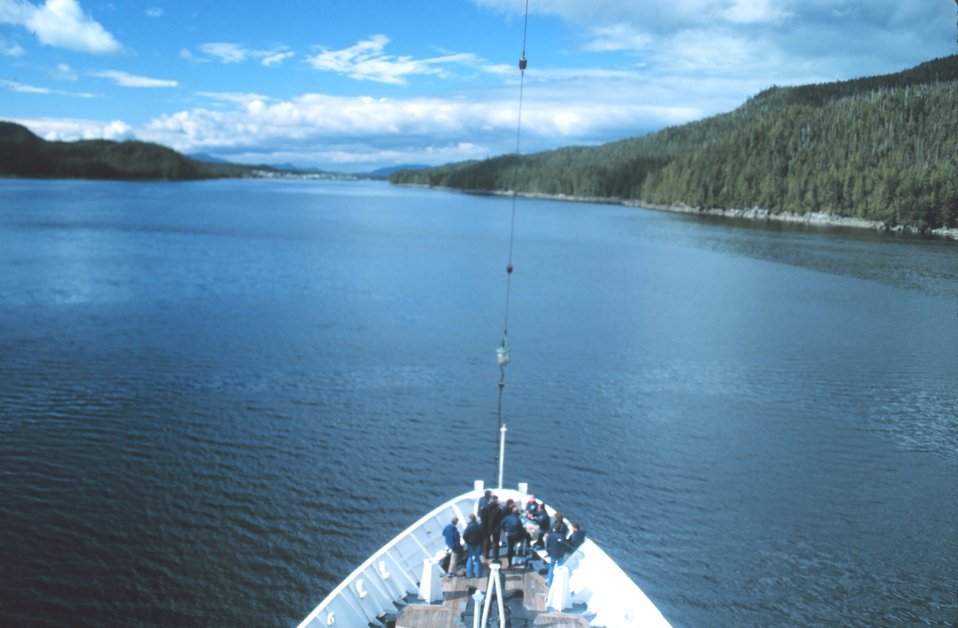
Taken from the NOAA Ship SURVEYOR